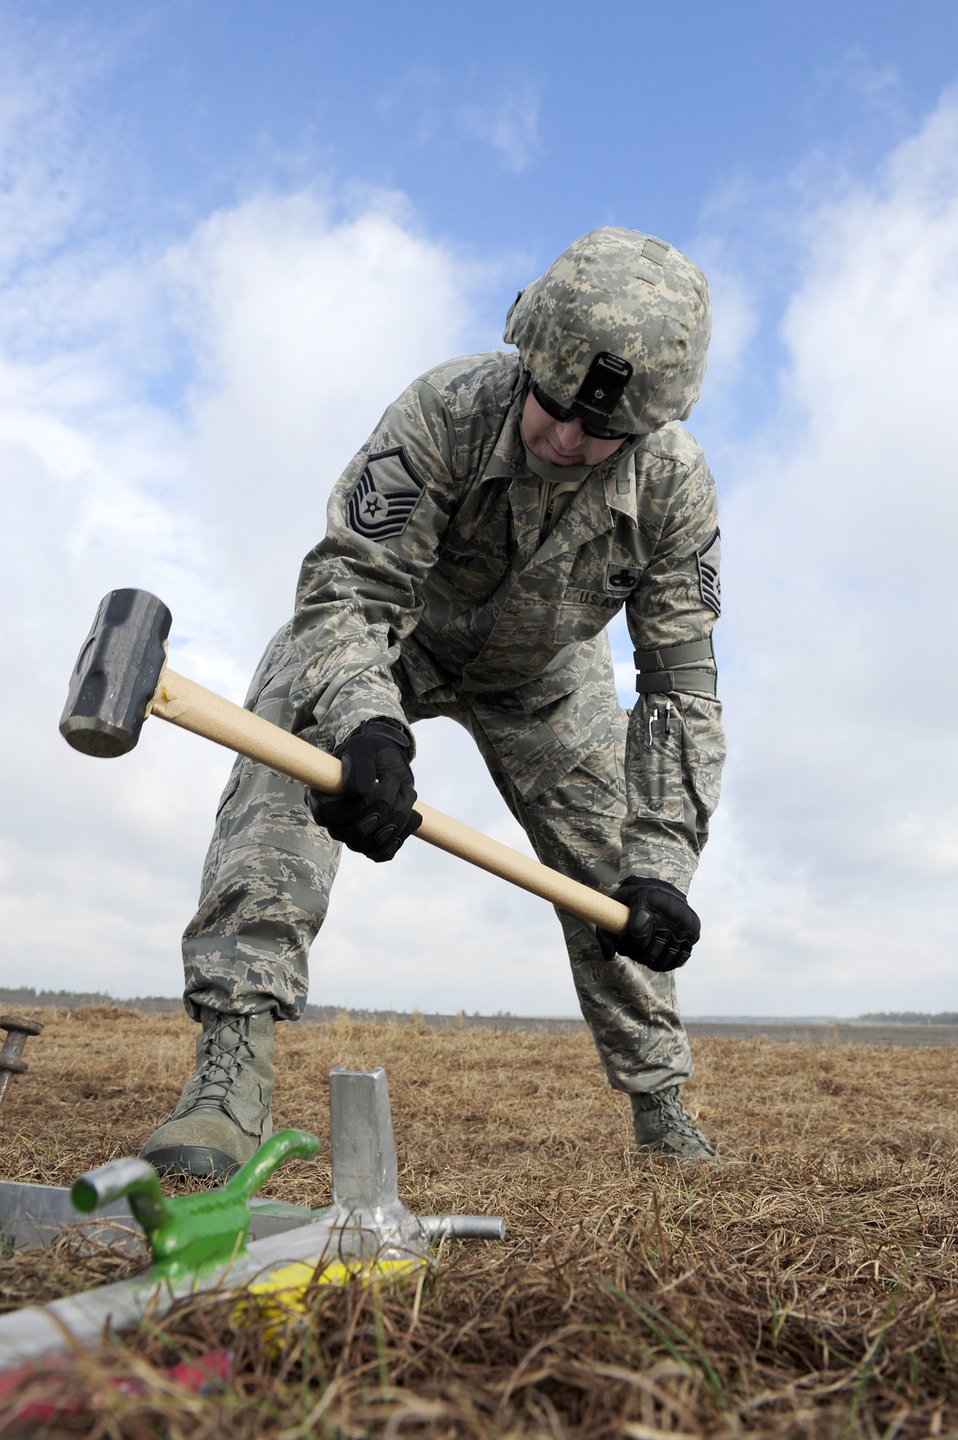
Joint operational access exercise

Master Sgt. Jason Dudley sets up a temporary structure for an air base during a joint operational access exercise Feb. 10, 2011, near Fayetteville, N.C. Sergeant Dudley is assigned to the 570th Global Mobility Readiness Squadron.